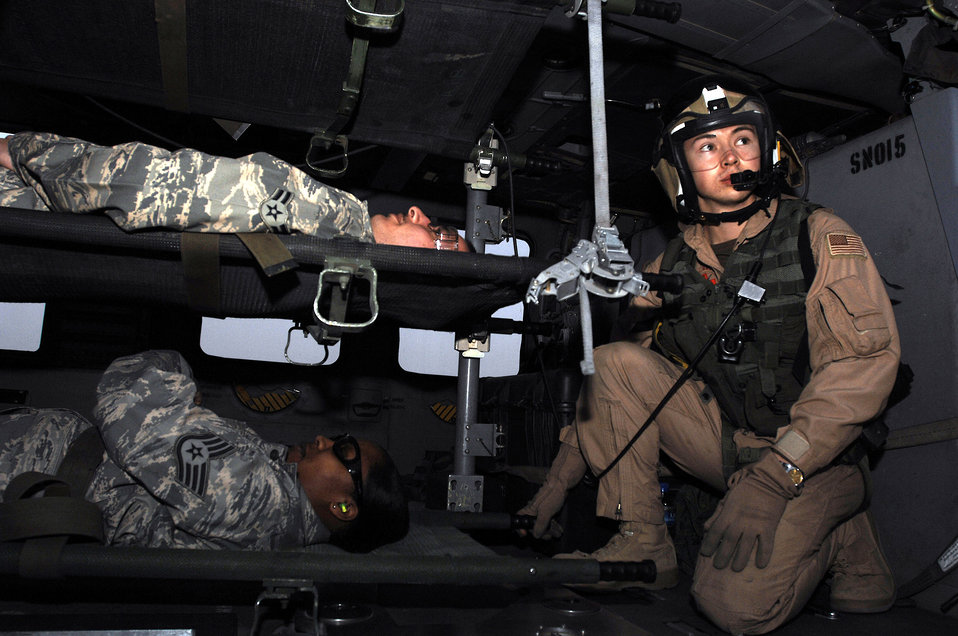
Litter training key to patient handling

Navy Petty Officer 3rd Class Eric Uhden (right) gazes out while Airman 1st Class Edward Cuza and Staff Sgt. Siobahn Simon wait to be extracted from a Navy MH-60 Sierra during litter management system training Feb. 18 at a Southwest Asia air base. The training familiarized medics on the loading and extracting techniques of patients for medical evacuation missions in support of operations Enduring Freedom and Iraqi Freedom. Airman Cuza and Sergeant Simon are assigned to the 386th Expeditionary Medical Group.